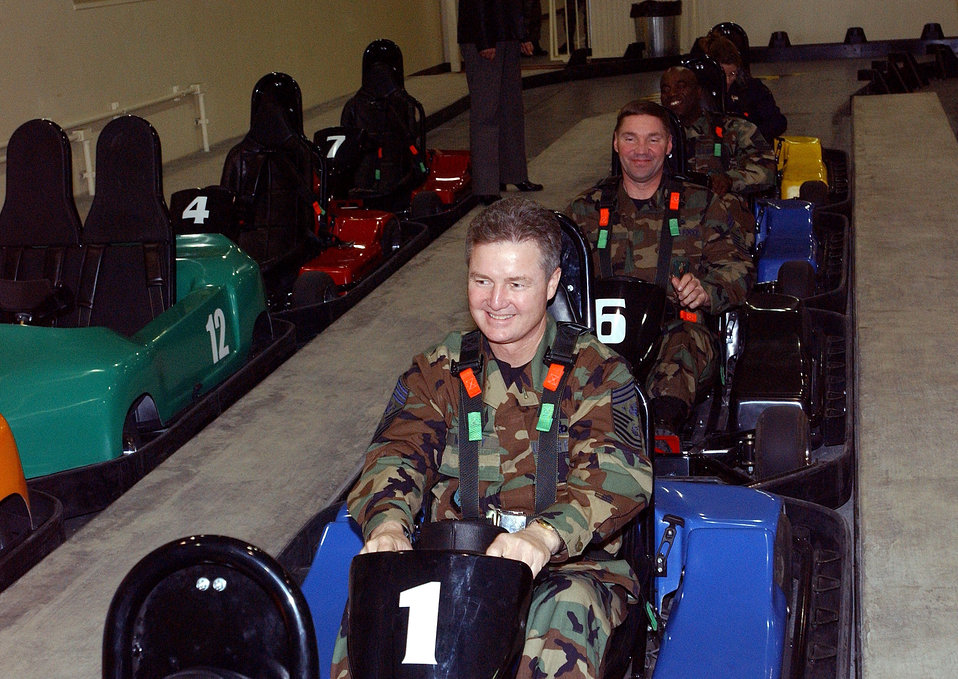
Life in the fast lane

MISAWA AIR BASE, Japan -- Chief Master Sgt. of the Air Force Gerald R. Murray prepares to drive a bumper car at the newly renovated recreation center here, the largest in the Air Force. Chief Murray visited with Airmen as part of a larger effort to monitor morale and quality of life.